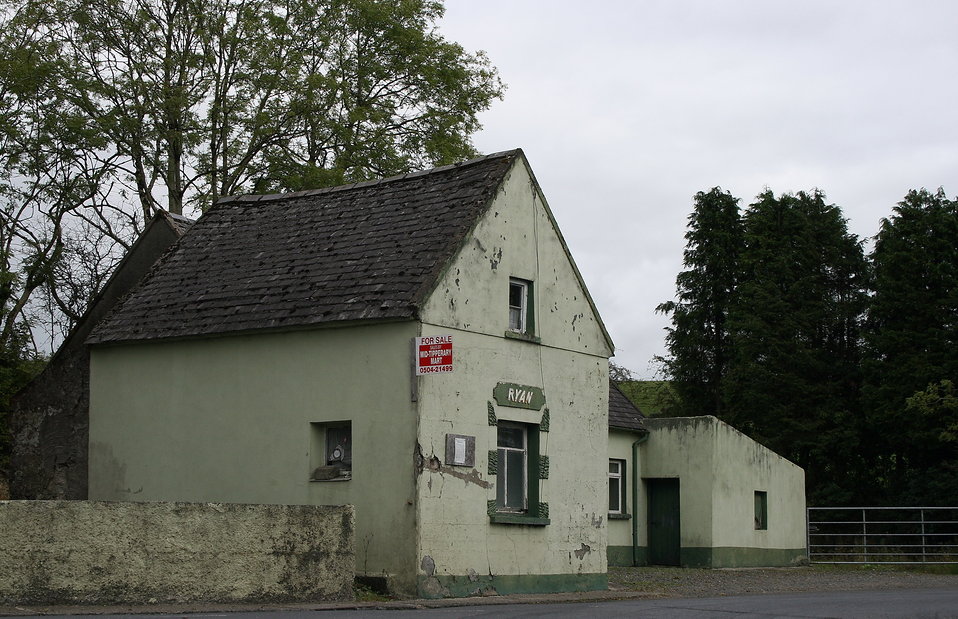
Pub in Milestone, County Tipperary, Ireland. Like very many rural pubs in similar locations it is now closed.